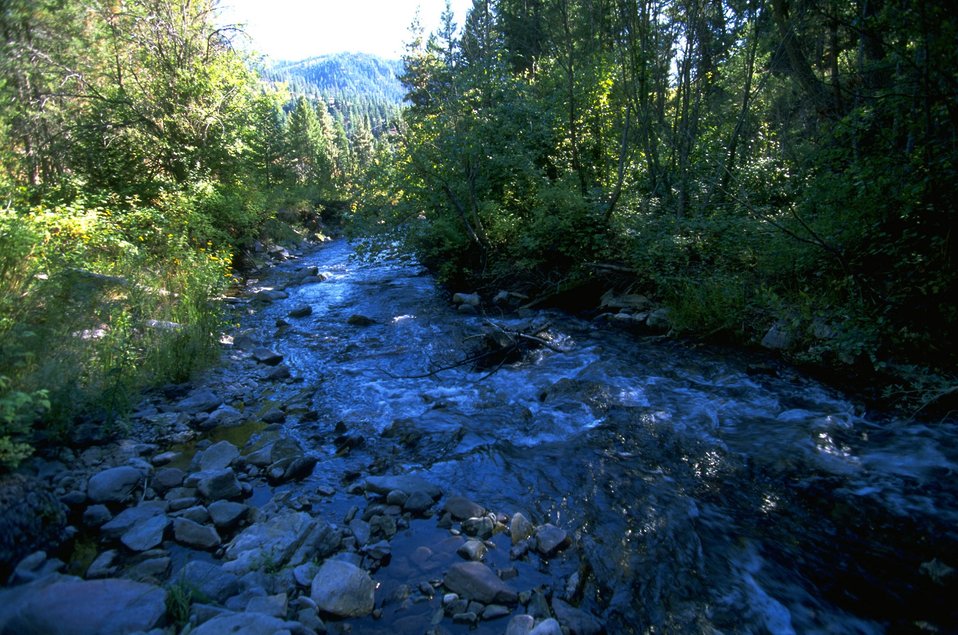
Belmont Creek, a tributary of the Blackfoot River